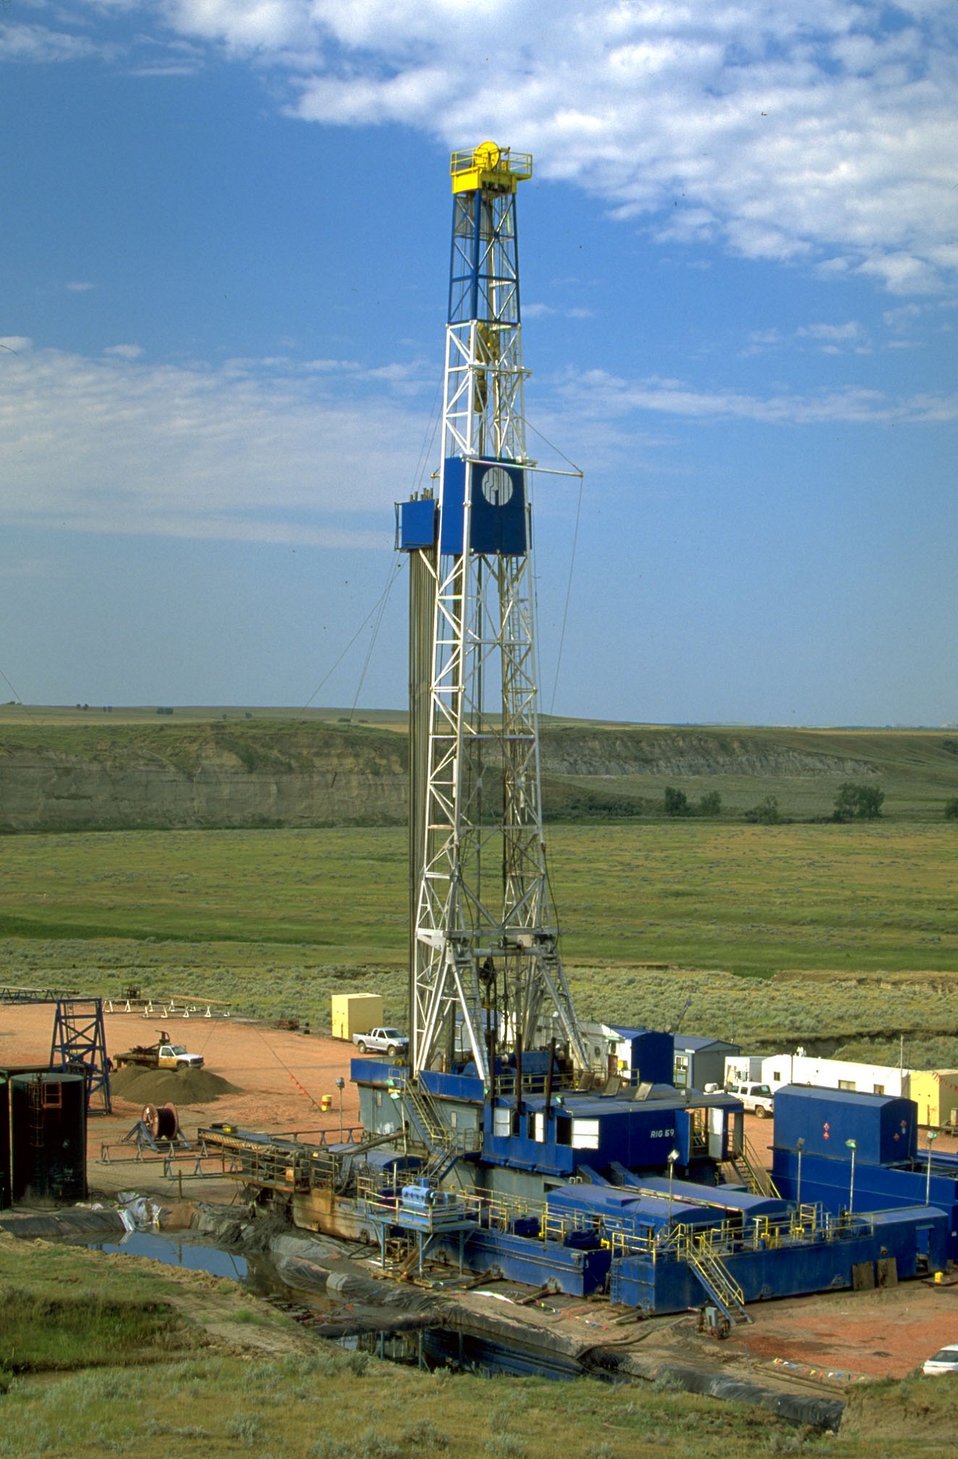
Drilling rig